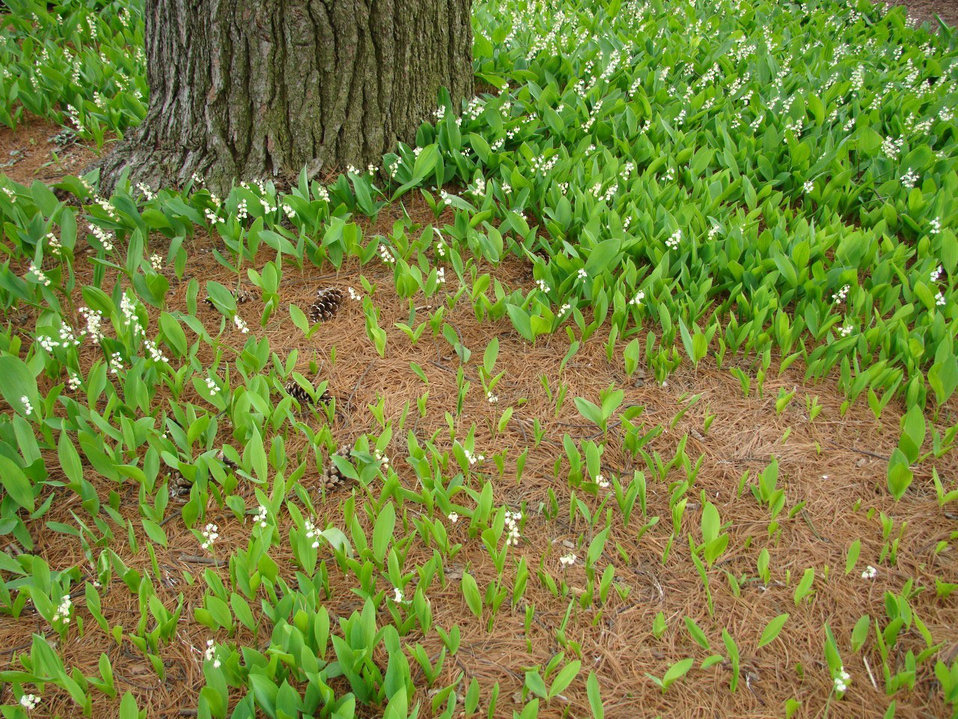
May lily flowers in the woods.